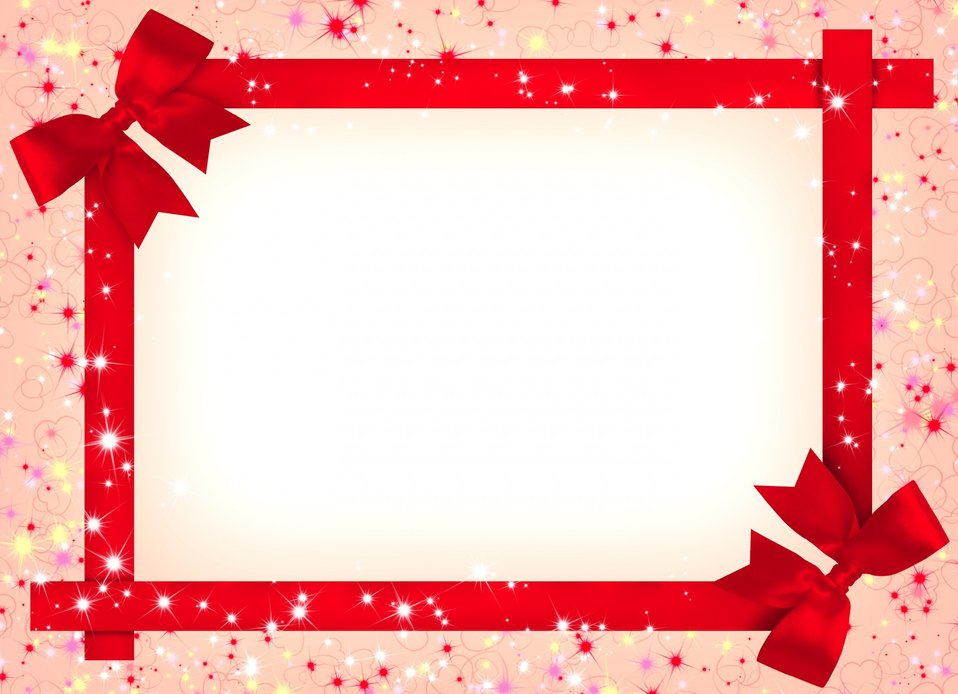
Abstract background with bows

Beautiful background with bows and hearts.